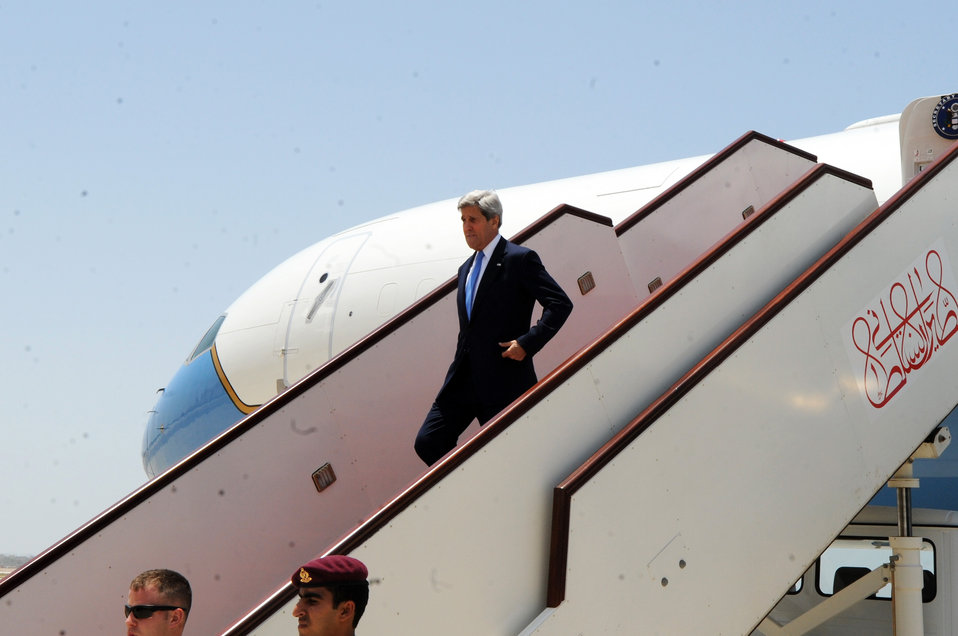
Secretary Kerry Arrives in Muscat, Oman

U.S. Secretary of State John Kerry disembarks from his plane upon arriving in Muscat, Oman, on May 21, 2013.